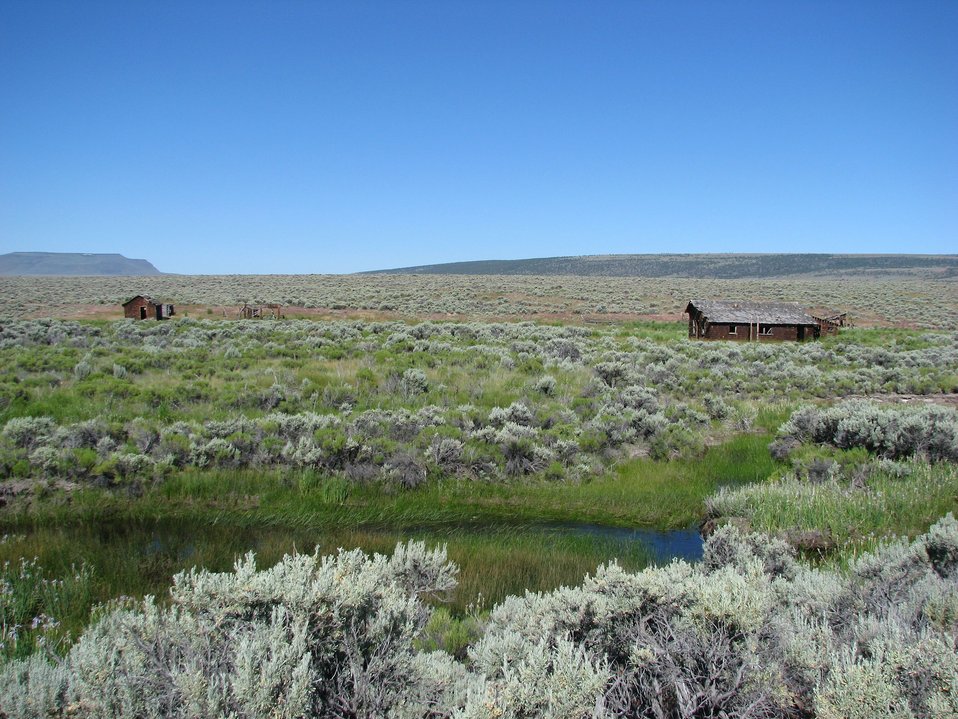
Anna Flook Homestead

Located on what is now Hart Mountain National Antelope Refuge, Oregon